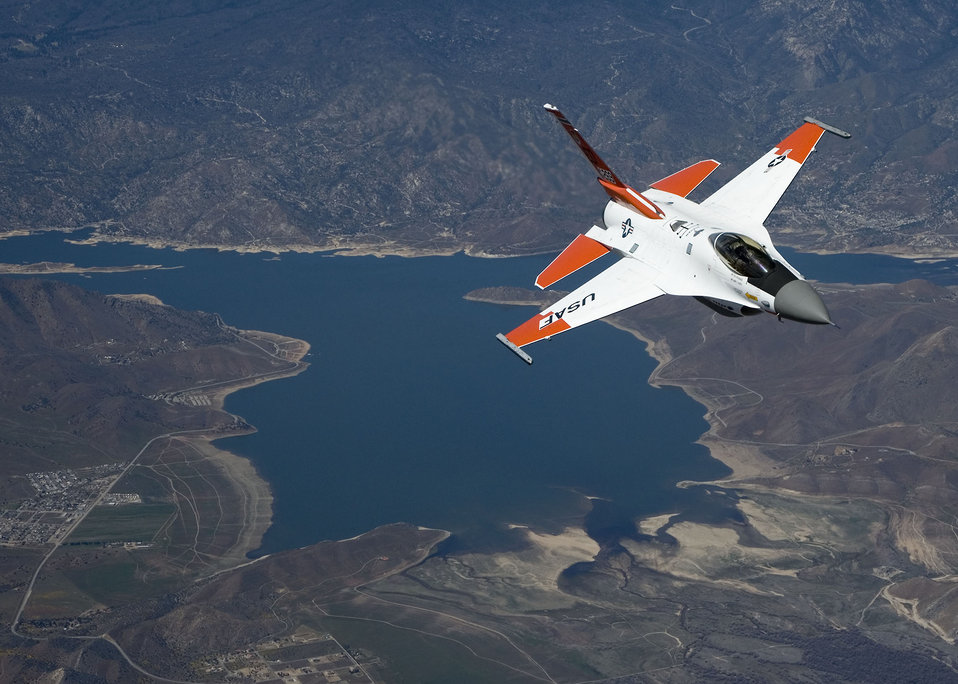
ARIA test

An F-16 Fighting Falcon fitted with radio frequency identification tags flies behind an NKC-135 Stratotanker during an aerial flight test April 7, 2010. The mission was to test the Automatic Receiver Aircraft Identification system installed on the NKC-135 test tanker.